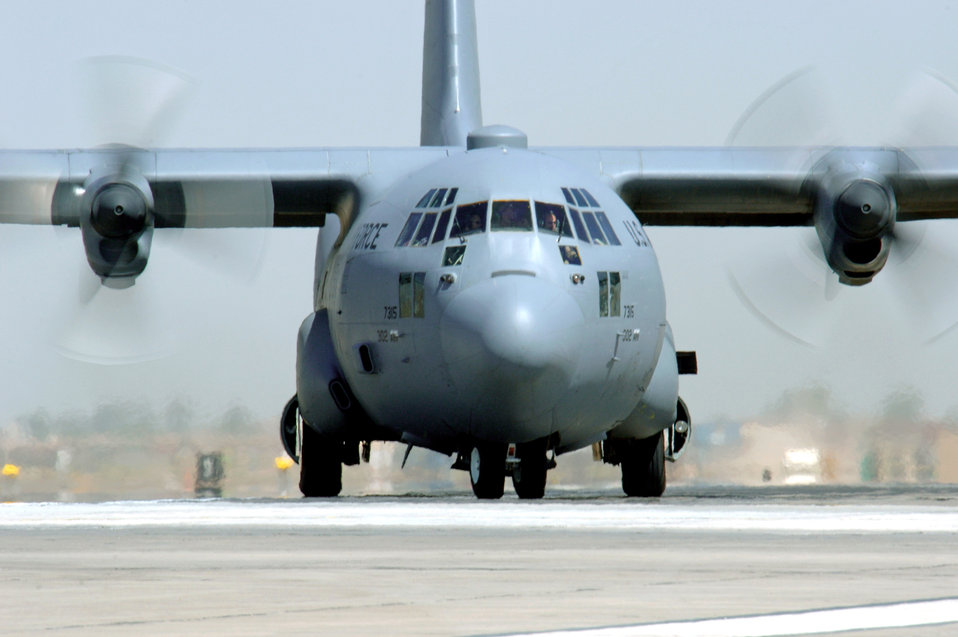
Operation Iraqi Freedom

A C-130 Hercules taxis in after an Operation Iraqi Freedom mission. C-130 aircraft provide intra-theater heavy airlift to help sustain operations throughout Afghanistan, Iraq and the Horn of Africa.